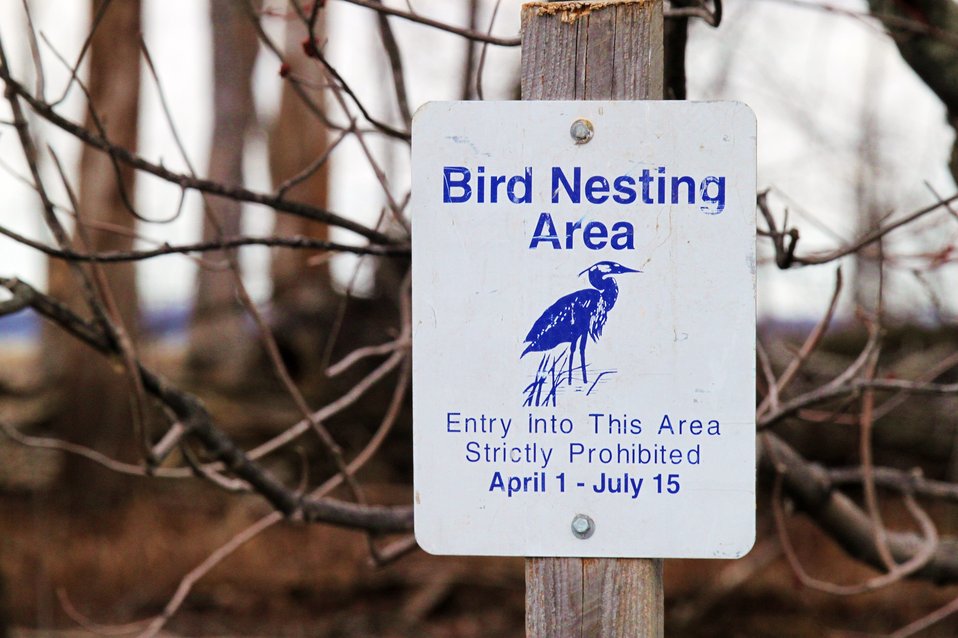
Great blue herons nesting area at Missisquoi National Wildlife Refuge

Missisquoi NWR hosts one of the largest nesting populations of great blue herons on Lake Champlain.